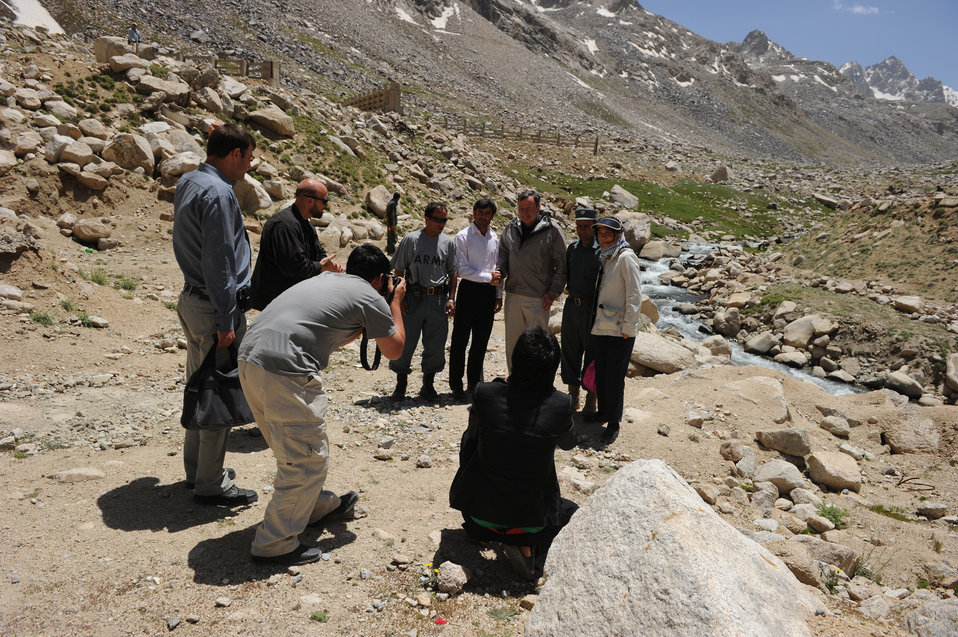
U.S. Ambassador Karl W. Eikenberry and his wife Ching pose with Afghan police near the North end of the Salang Tunnel on the border of Parwan and Baghlan Provinces, Afghanistan, on Wednesday, June 15, 2011. (S.K.Vemmer/Department of State)